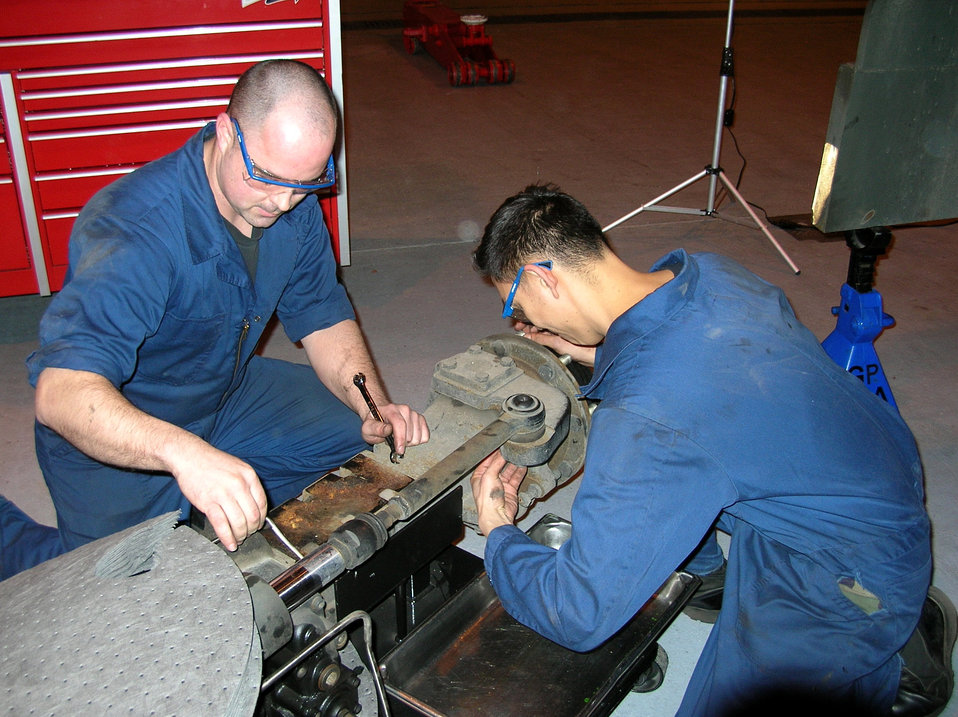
Vehicle maintenance Airmen use AFSO 21 initiatives

Staff Sgts. Tom Crouch (left) and Lee Samson inspect a B-4 tow axle before disassembly Feb. 1 at Royal Air Force Mildenhall, England. The two are reviewing the steps for new procedures that are making the process easier and safer. The AIrmen are from the 100th Logistics Readiness Squadron Vehicle Maintenance Shop.